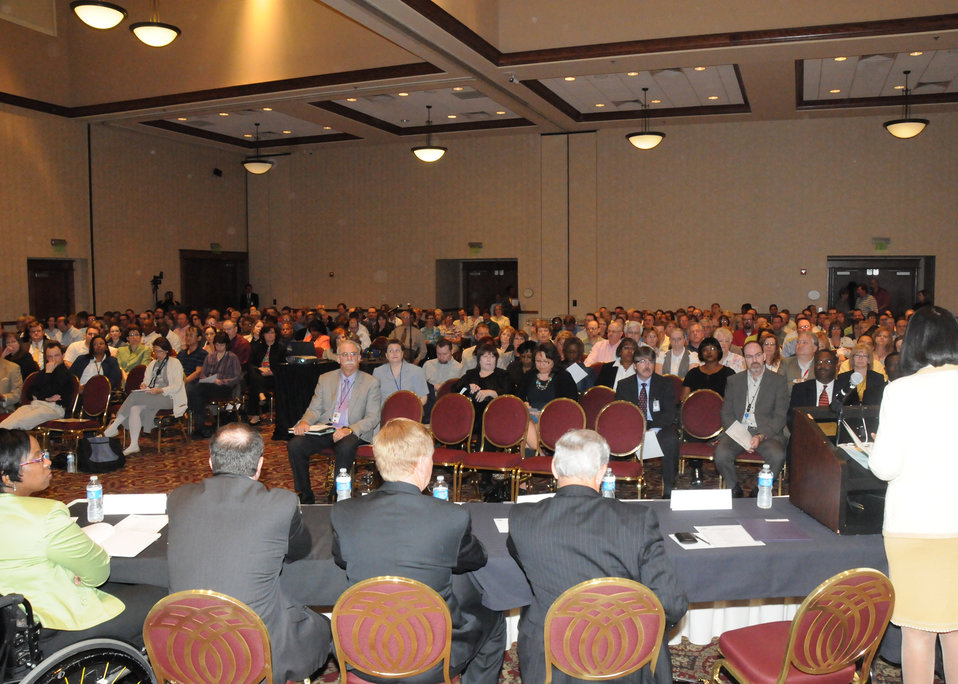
The U.S. Department of Agriculture (USDA) held the third of six Cultural Transformation Employee listening sessions in Kansas City, MO., on Wednesday, April14, 2010. USDA employees expressed their concerns with issues at the Department and made suggestions for correcting them and improving the image of USDA. USDA photo 10di1308-50